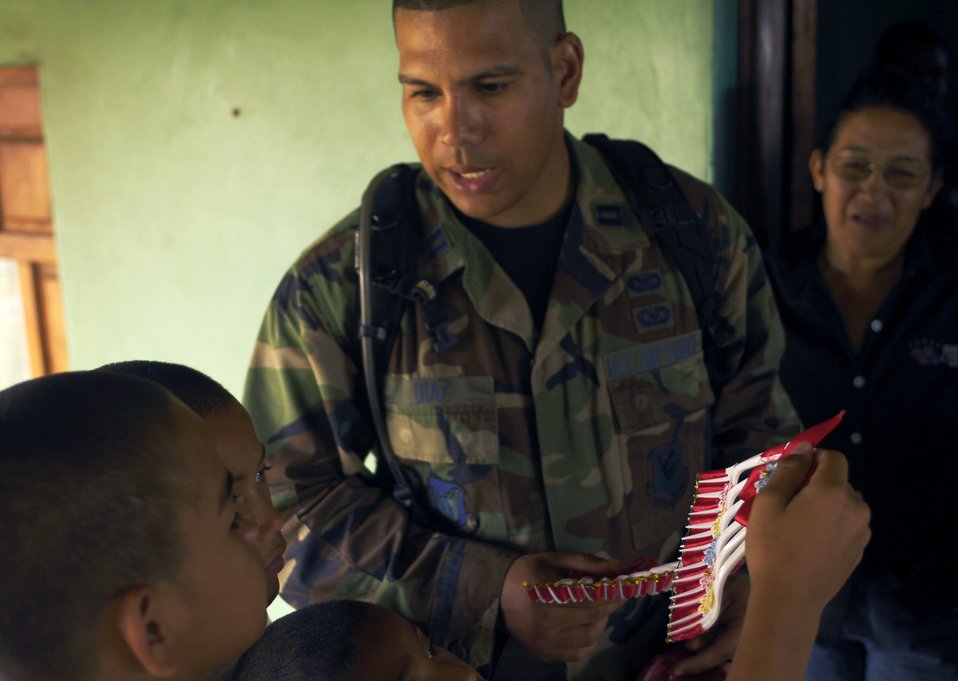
New Horizons-Nicaragua 2007 provides aid, strengthens bonds

Capt. Carlos Diaz wishes a happy birthday to an orphan during a party at the ABC Feed the Children Orphanage near San Taresa, Nicaragua. Captain Diaz is a public affairs officer participating in New Horizons-Nicaragua 2007, a $7.25 million joint U.S. and Nicaraguan military humanitarian and training exercise that will provide a new school and medical clinic, as well as free health and veterinary care, giving aid and strengthening bonds between the two nations.